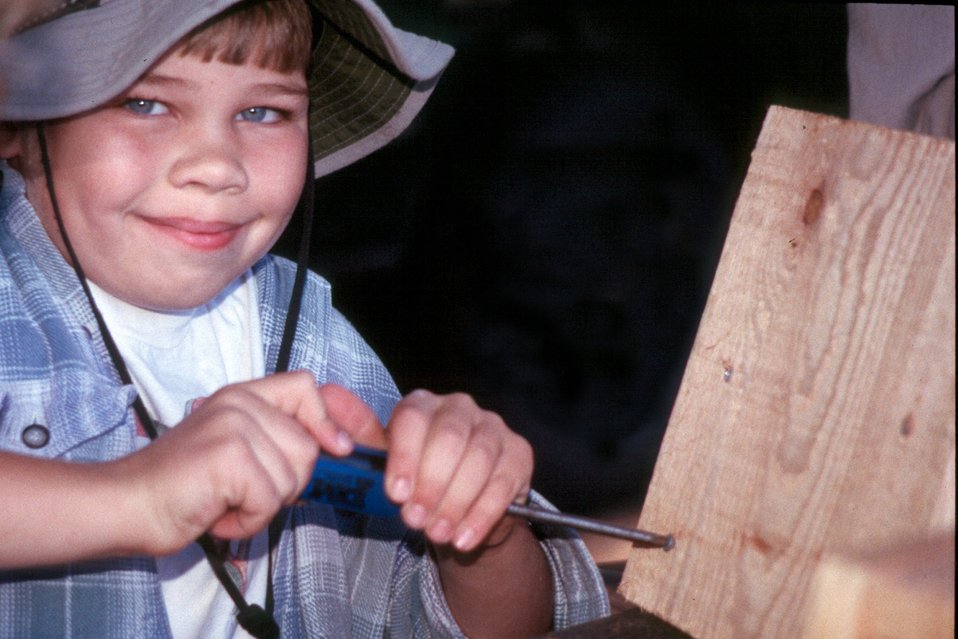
Volunteer Triston Center assembling a bird box